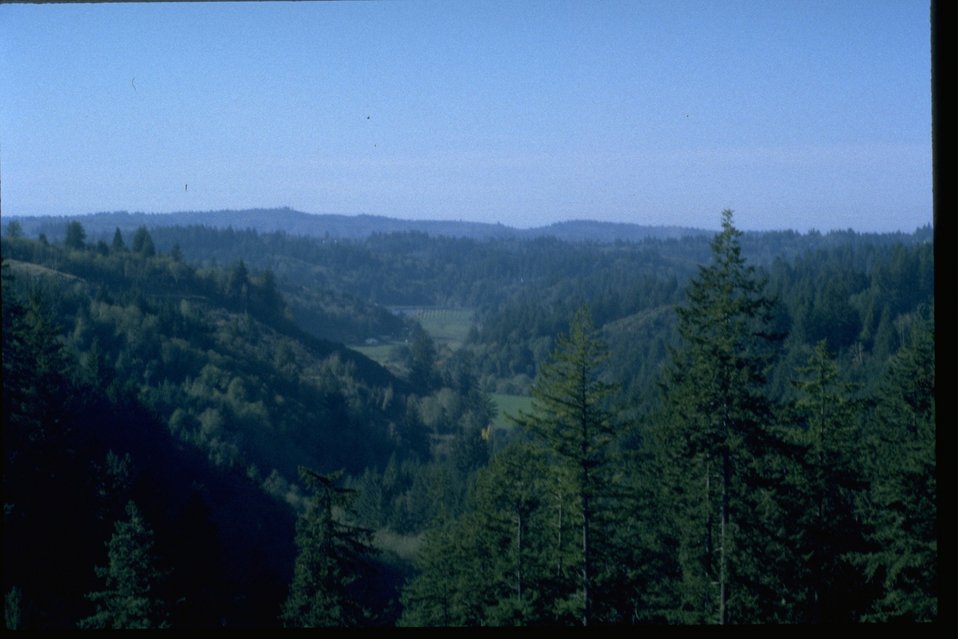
Looking due west from Blue Ridge.